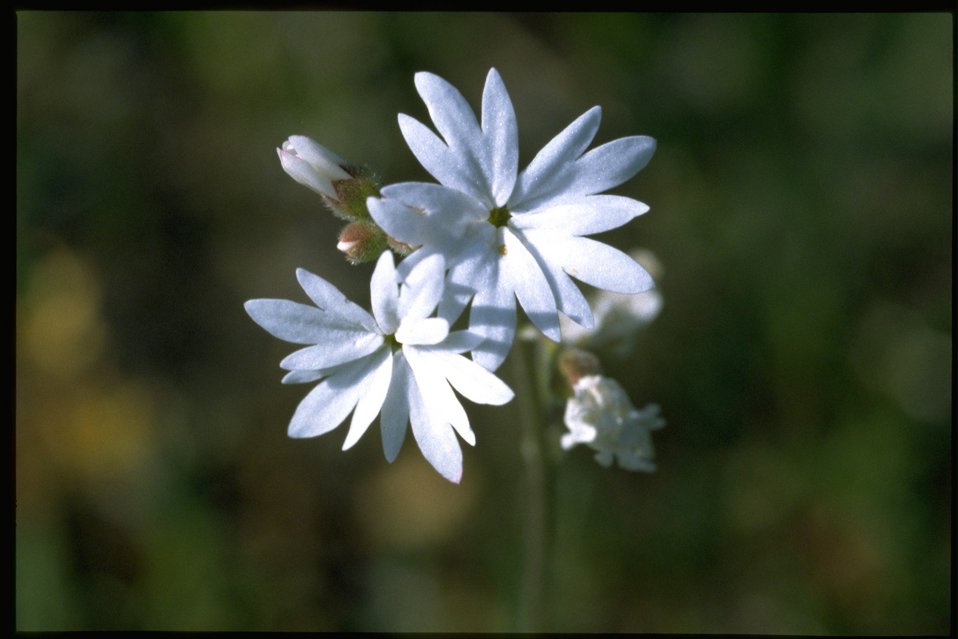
Closeup shot of Prairie Star wildflower (Lithophragma Sp.)